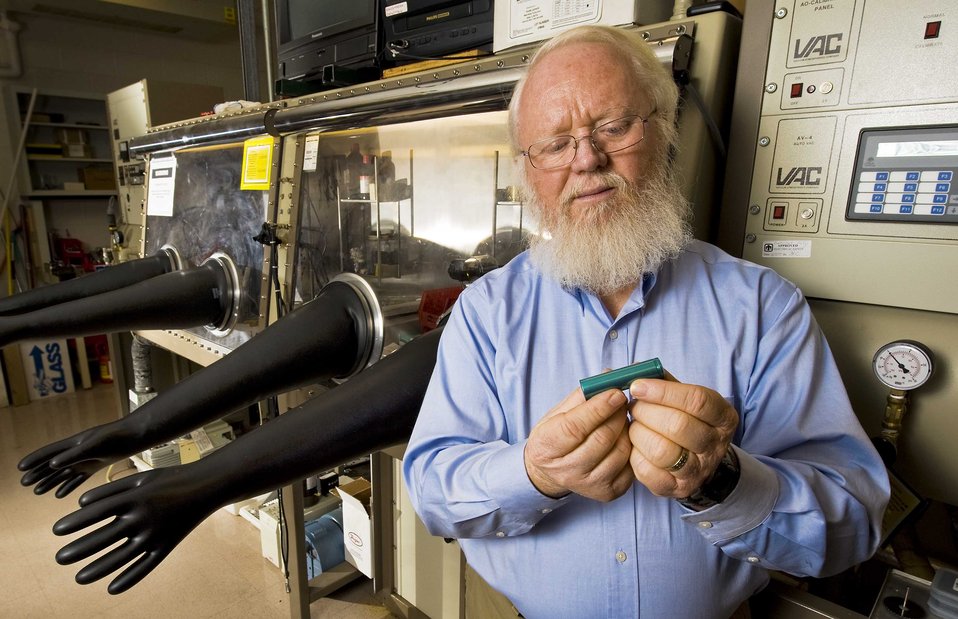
Sandia researcher examines a lithium-ion battery before dismantling it for testing in the chamber behind him.

Sandia's Battery Abuse Testing Laboratory (BATlab) is internationally recognized as a leader in the field of battery testing to ensure they meet real-world performance requirements. Their goal is developing low-cost batteries for electric and plug-in hybrid vehicles.